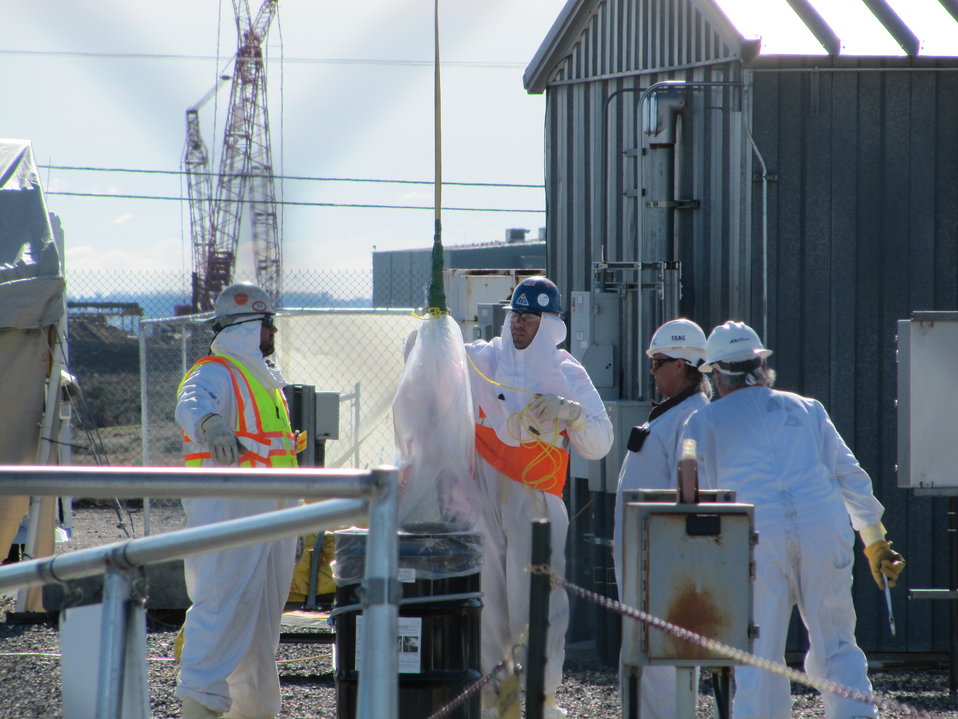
Hanford ORP Recovery Act Projects

Workers prepare to install new Recovery Act-funded equipment in a Hanford tank farm.